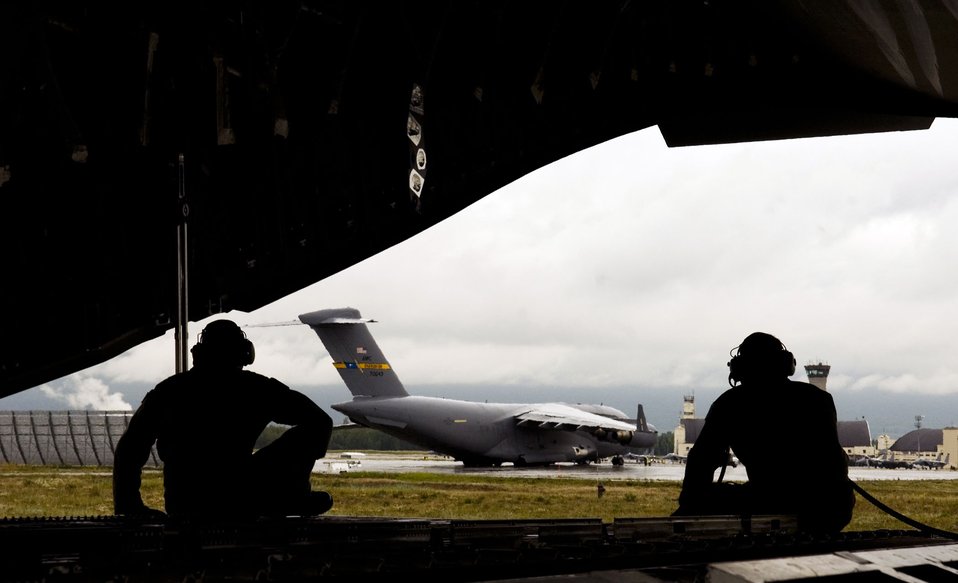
Elmendorf, coalition forces hone skills at Red Flag-Alaska

Staff Sgt. Justin Mulder (right), and Senior Airman Keith Roscoe sit in the back of a C-17 Globemaster III as the aircraft taxies following a Red Flag-Alaska training sortie July 24 at Elmendorf Air Force Base, Alaska. Sergeant Mulder is assigned to the 517th Airlift Squadron at Elmendorf AFB, and Airman Roscoe is assigned to the 535th AS at Hickam AFB, Hawaii. More than 80 aircraft and 1,500 servicemembers from the six countries are flying together in this multinational exercise that provides realistic combat training in a safe and controlled setting over the Pacific Alaskan Range Complex and Eielson AFB, Alaska.